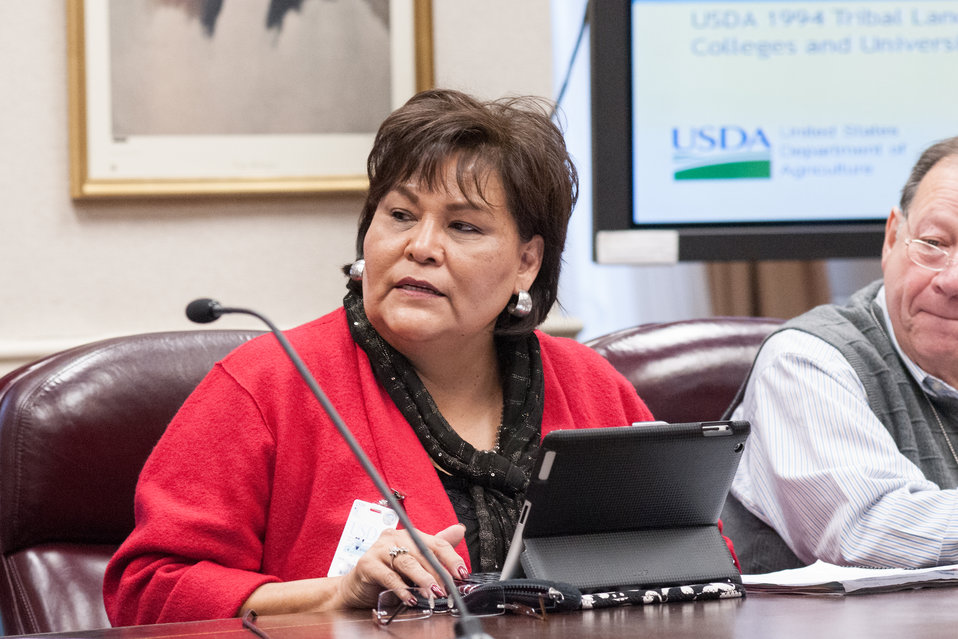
Southwestern Indian Polytechnic Institute President Sherry Allison, Albuquerque, New Mexico, introduces herself, during the USDA and American Indian Higher Education Consortium (AIHEC) Leadership Group Winter Meeting, at the USDA Whitten Building, Williamsburg Room, in Washington D.C., on Friday, Feb. 8, 2013.